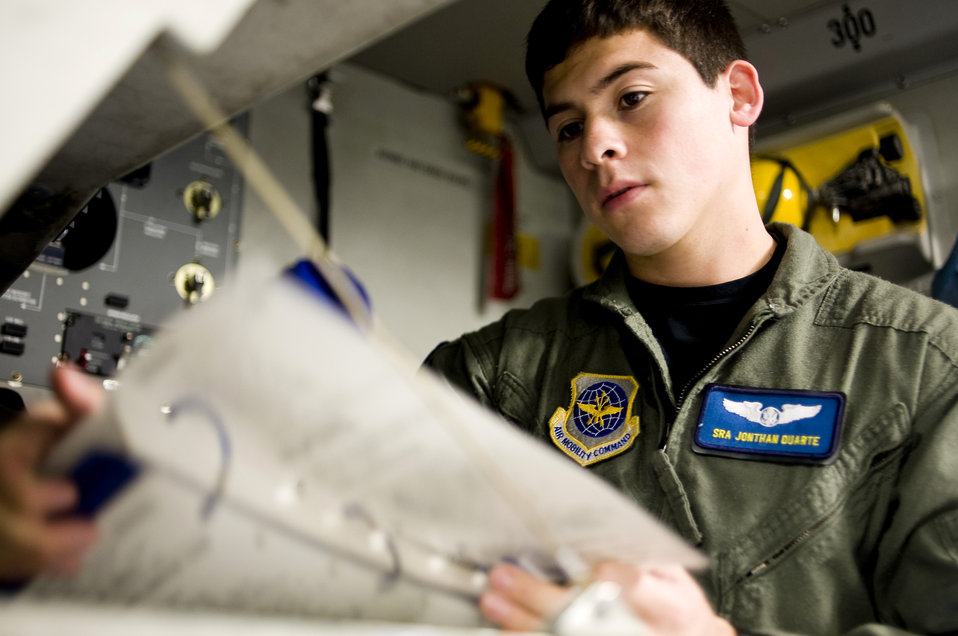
McChord Airmen fly response team to American Samoa

Senior Airman Jonathan Duarte reviews a preflight checklist aboard a C-17 Globemaster III Oct 1, 2009, at McChord Air Force Base, Wash. In the wake of a 7.6 magnitude undersea earthquake that caused a devastating tsunami to strike American Samoa, McChord AFB Airmen deployed a U.S.-based Federal Emergency Management Agency team to the region at 2 p.m. Oct. 1 aboard a C-17. Airman Duarte is assigned to the 7th Airlift Squadron.